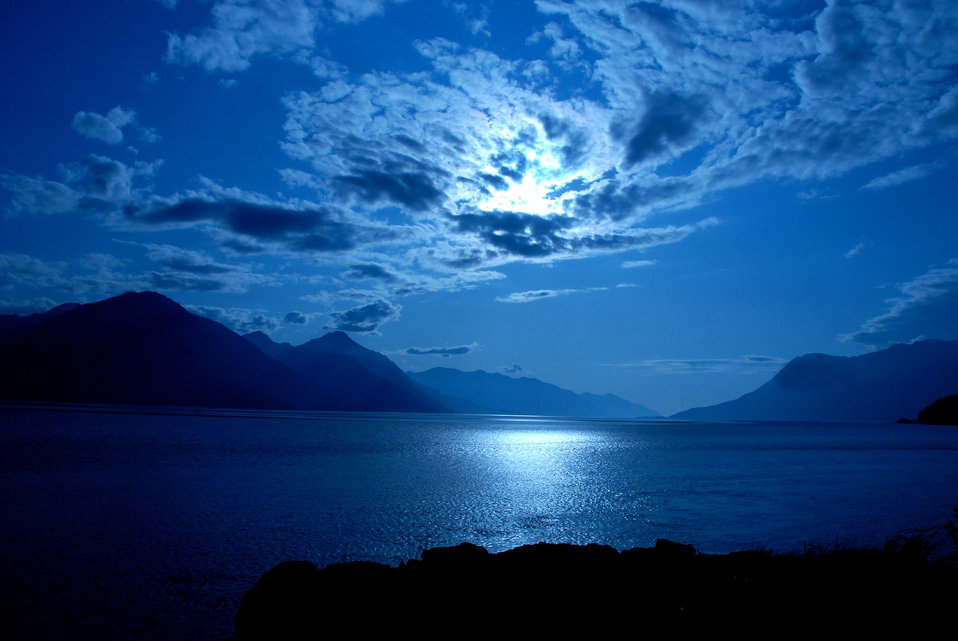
Rural Tour 0010